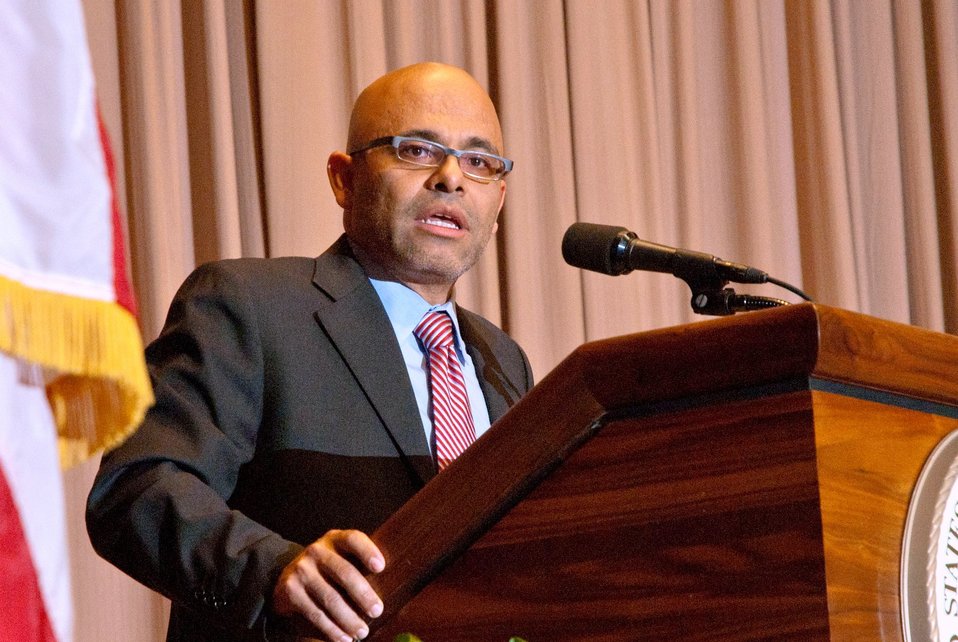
White House Initiative on Educational Excellence for Hispanic Americans Deputy Director José Rick was the keynote speaker for the observance of National Hispanic Heritage Month at the United States Department of Agriculture (USDA) in the Jefferson Auditorium, in Washington, D.C. on Thursday, September 15, 2011.